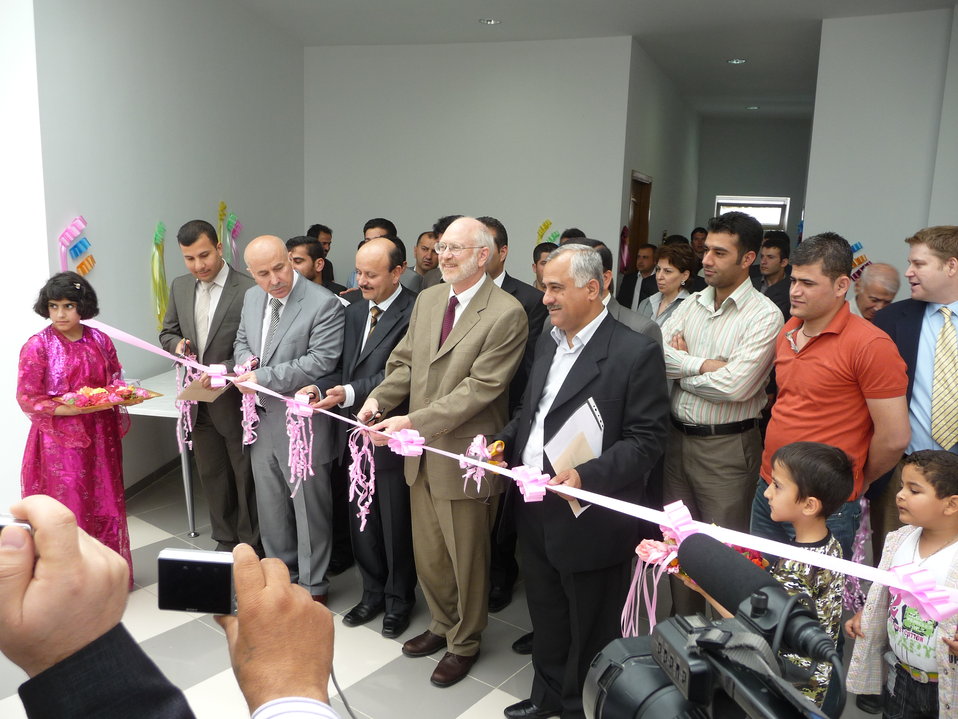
U.S. Officials Celebrate USAID-Funded Orphanage/Eldercare Facility

RRT Erbil Team Leader Andy Snow celebrate at the ribbon cutting ceremony for USAID-funded orphanage/eldercare facility in Erbil, Iraqi Kurdistan, Iraq, April 2010.